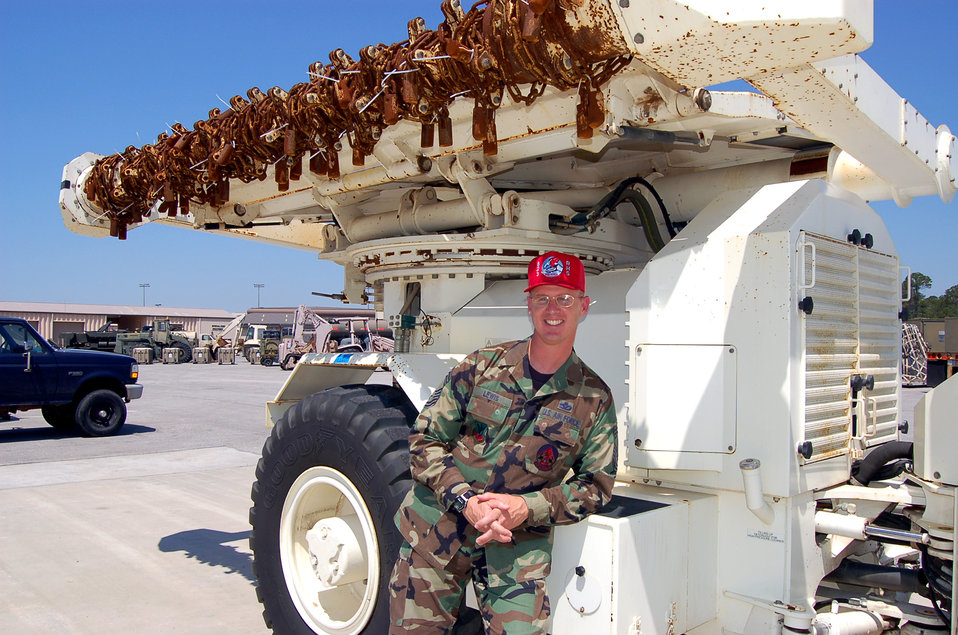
Robotic vehicle helps clear minefields

Chief Master Sgt. Mark Lewis shows off the Air Force's first robotic mine-area clearing vehicle at Hurlburt Field, Fla., on Tuesday, May 23, 2006. Developed by the 823rd Red Horse at Hurlburt and the Air Force Research Laboratory at Tyndall Air Force Base, Fla., the vehicle is scheduled to be deployed to Afghanistan within the next two months to help clear minefields for airfield expansion and route clearing. Chief Lewis is the Red Horse's chief of airfields.